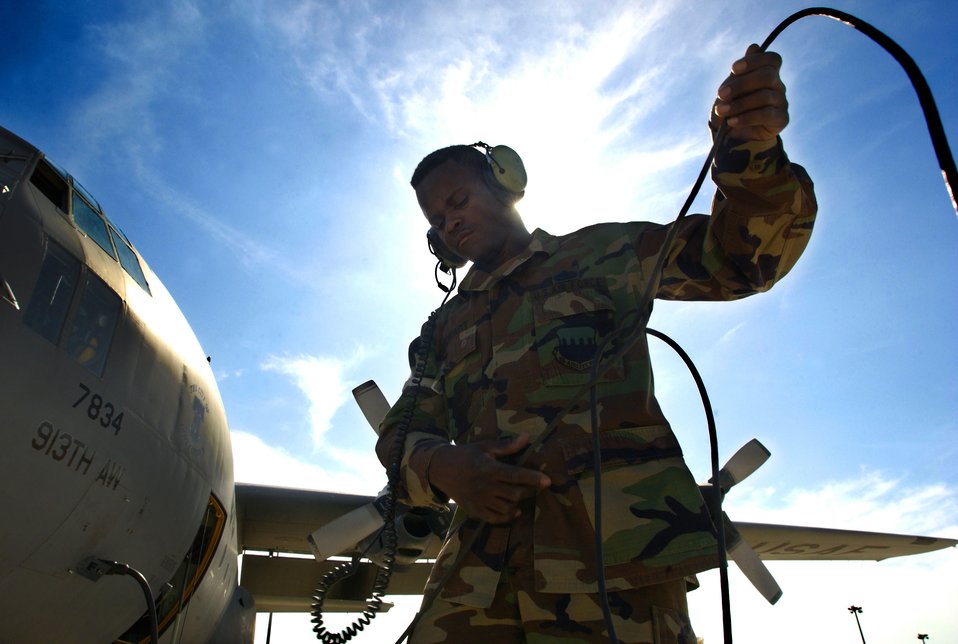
Cable guy

POPE AIR FORCE BASE, N.C. -- Tech. Sgt. Randy Stewart gathers up a communication cable during a Joint Forcible Entry Exercise here April 4. JFEX is a joint airdrop exercise designed to enhance service cohesiveness between U.S. Army and Air Force personnel, allowing both services an opportunity to properly execute large-scale heavy equipment and troop movement. Sergeant Stewart is a C-130 aircraft mechanic with the 43rd Aircraft Maintenance Squadron.